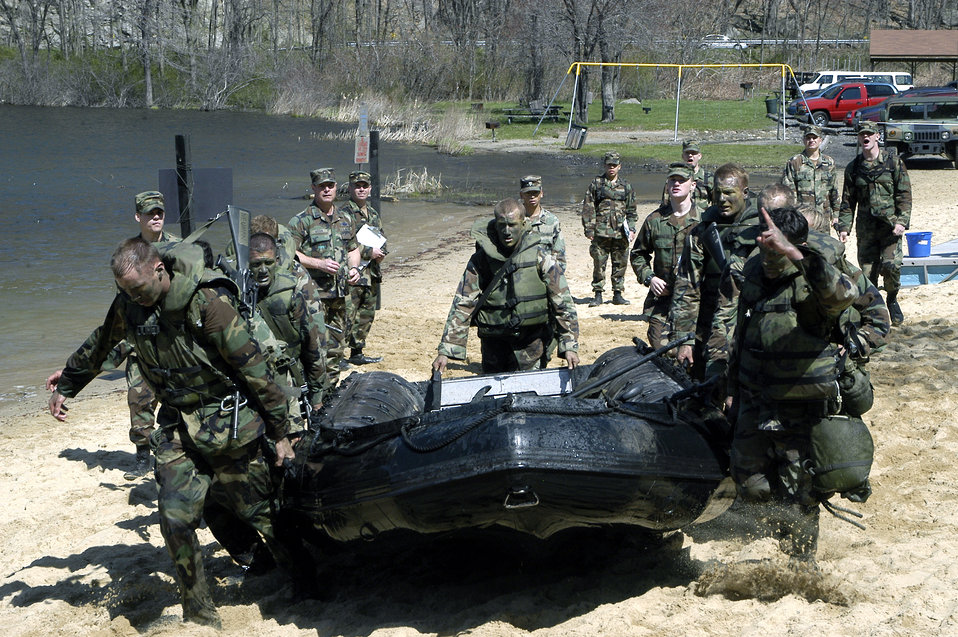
Cadets take fourth at Sandhurst

WEST POINT, N.Y. -- U.S. Air Force Academy cadets take part in the zodiac boat movement event during the Sandhurst competition here April 24. The cadets placed fourth out of 45 teams entered in the event.